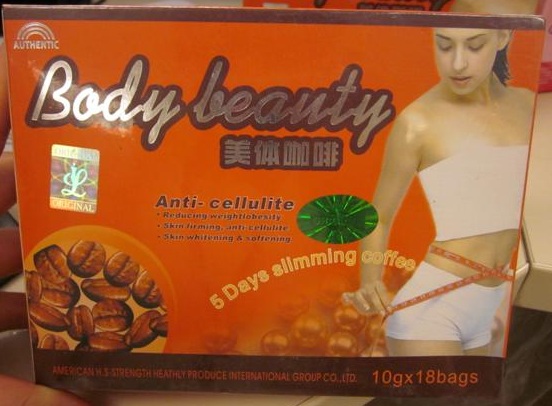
Body Beauty 5 Days Slimming Coffee

November 21, 2013 - The FDA is advising consumers not to purchase or use 'Body Beauty 5 Days Slimming Coffee,' a product promoted and sold for weight loss. The product was found to contain undeclared sibutramine. For more information, go to www.fda.gov/Drugs/ResourcesForYou/Consumers/BuyingUsingMe...

And read this Consumer Update: Beware of Fraudulent ‘Dietary Supplements’